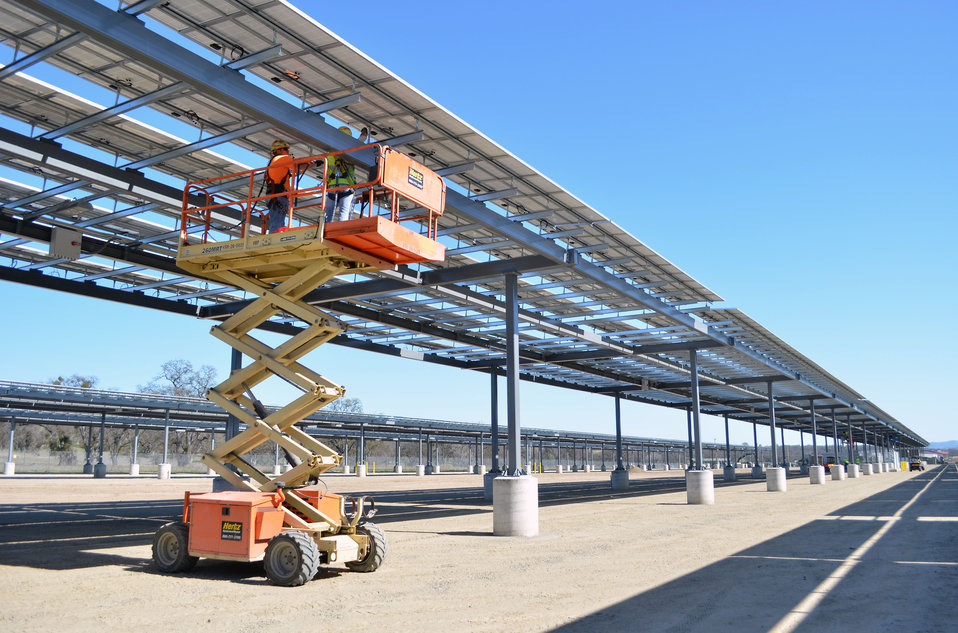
Solar project at Fort Hunter Liggett - March 2013

Construction workers complete electrical connections on phase 2 of a solar microgrid project at Fort Hunter Liggett, Calif., March 12, 2013. The U.S. Army Corps of Engineers Sacramento District managed construction of the project, awarding contracts of $8.4 million for phase I and $9.7 million for phase 2. Phase 2, scheduled for completion in May 2013, will generate one megawatt of power and is expected to be the second of four at the post. Phase 1 was completed in April 2012 and also generates one megawatt of power, enough energy to power 250 to 300 homes. Along with the energy production, the panel arrays form a canopy that will shade the majority of the post’s vehicles. Fort Hunter Liggett is one of six pilot installations selected by the U.S. Army to be net zero energy, meaning the installation will create as much energy as it uses.